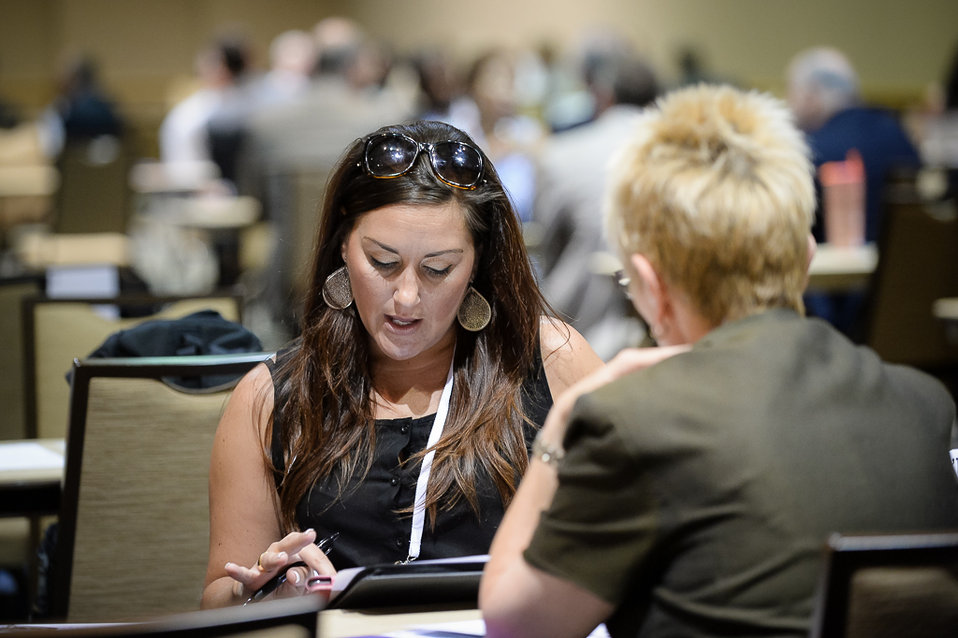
OSDBU Conf 2